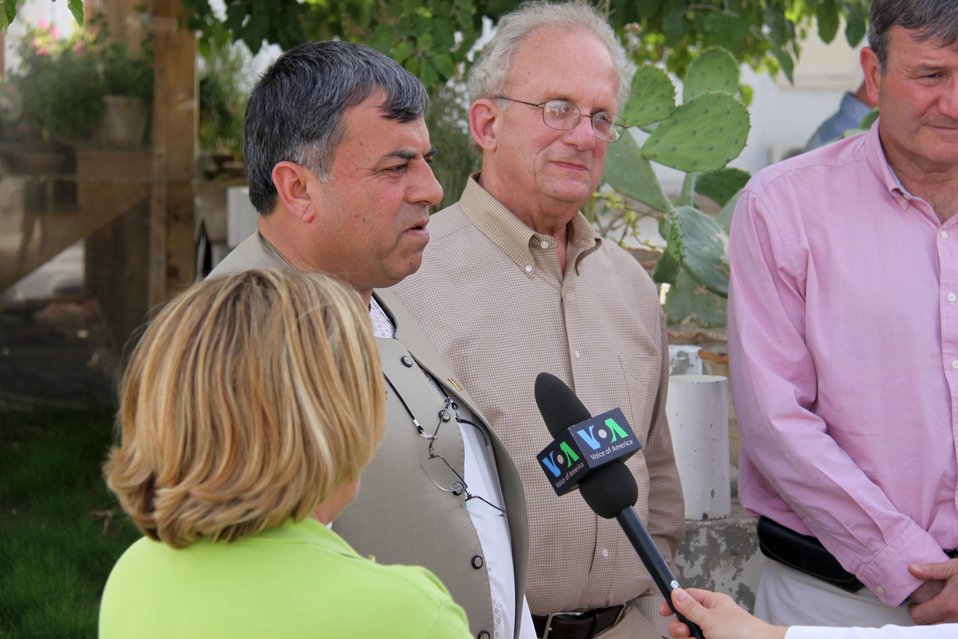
Meeting with Local Leaders in Kandahar